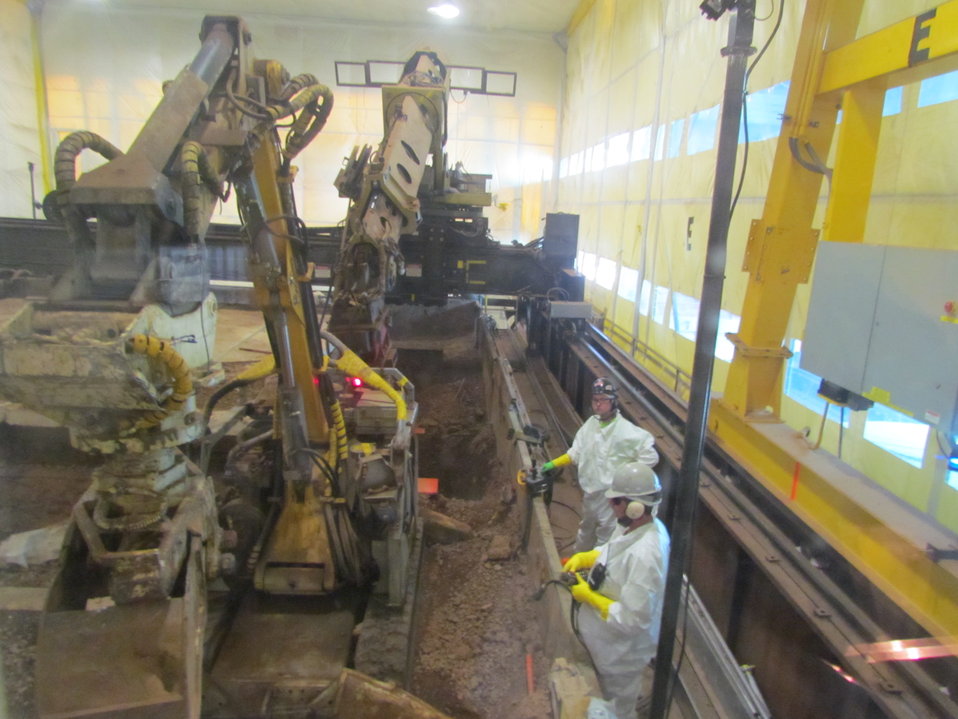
Recovery Act Workers Safely Decommission Brookhaven Nuclear Reactor

Equipment operators work to dismantle the Brookhaven Graphite Research Reactor’s bioshield.